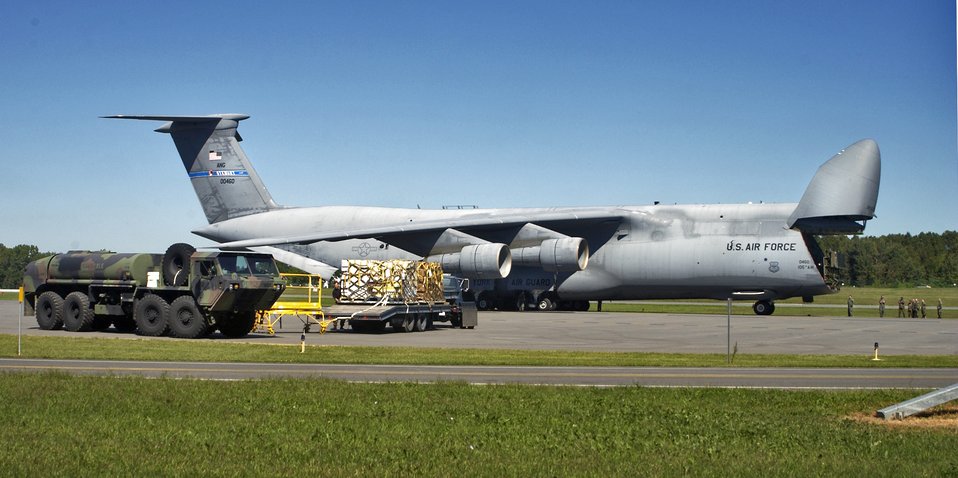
More relief on the way

ALBANY, N.Y. -- A C-5 Galaxy sits on the flightline before cargo is loaded Sept. 5 by Airmen with the 109th Aerial Port Squadron at the Albany International Airport. The cargo was bound for Gulfport, Miss., in support of Hurricane Katrina relief operations. The Galaxy belongs to the New York Air National Guard's 105th Airlift Wing that has flown 12 missions delivering about 1.5 million pounds of cargo and 400 passengers in support of the relief effort.